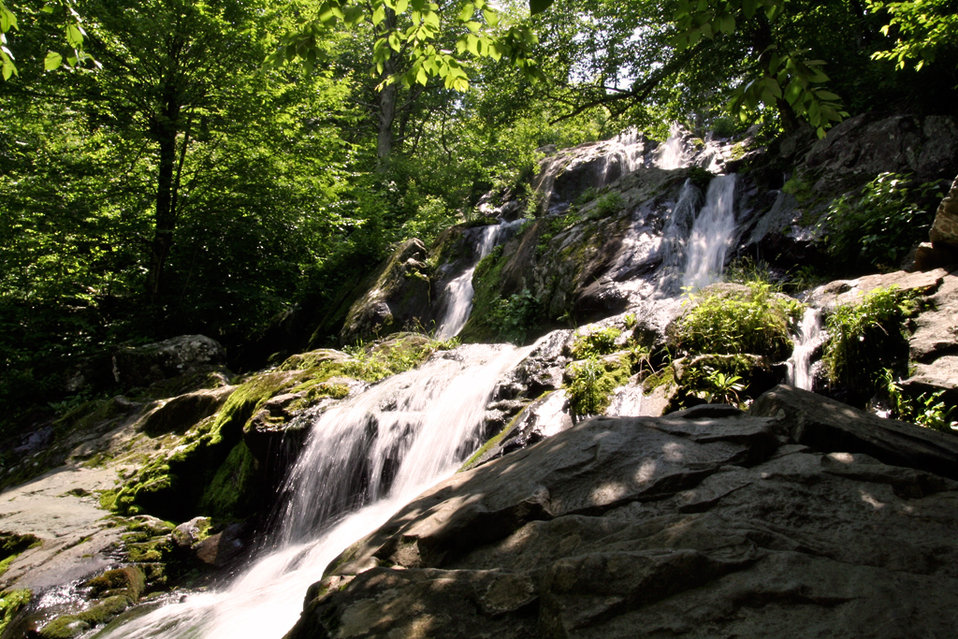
Dark Hollow Falls, Summer 2007.